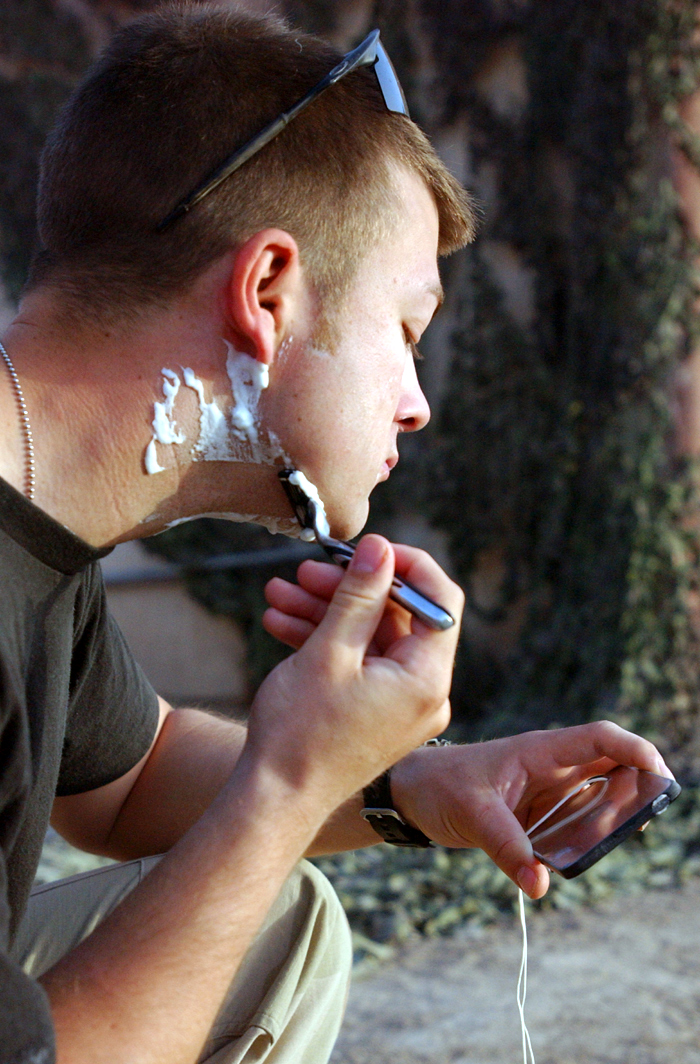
Morning shave

OPERATION IRAQI FREEDOM -- Senior Airman Nick Last, explosive ordinance technician, takes an opportunity to get an early morning shave before work. Last clears unexploded ordinance on Tallil Air Base, Iraq supporting Operation Iraqi Freedom.